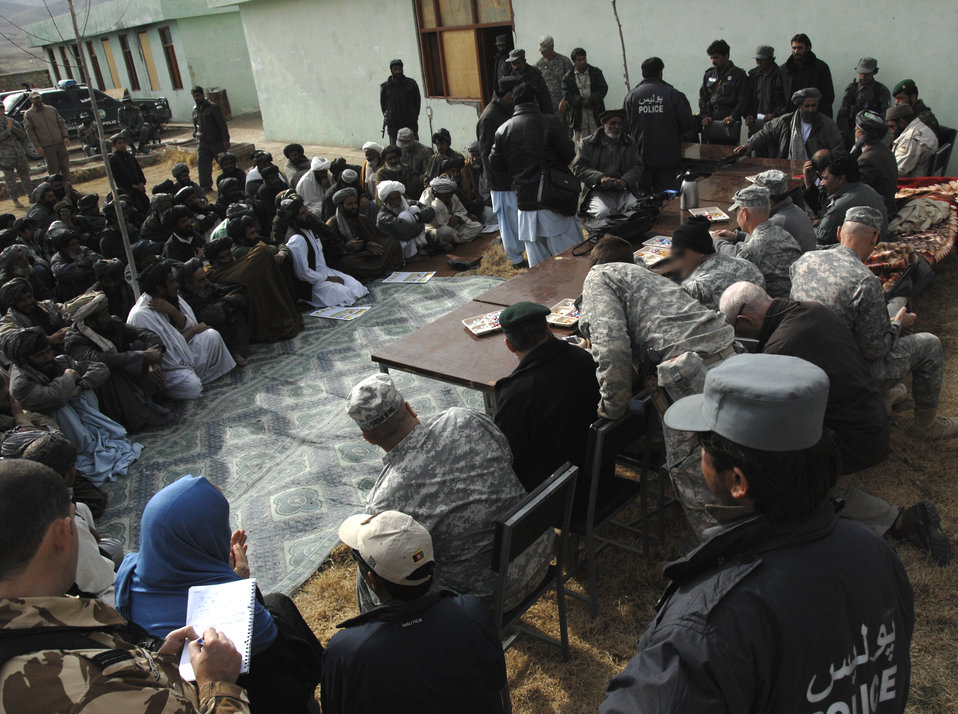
American servicemembers bridge gap between Afghan provinces, relationships

Afghan nationals and coalition forces gather at the Arghandab District Center in the Zabul province prior to Arghandab Bridge opening ceremony Dec. 26, 2009 at Zabul Province, Afghanistan.